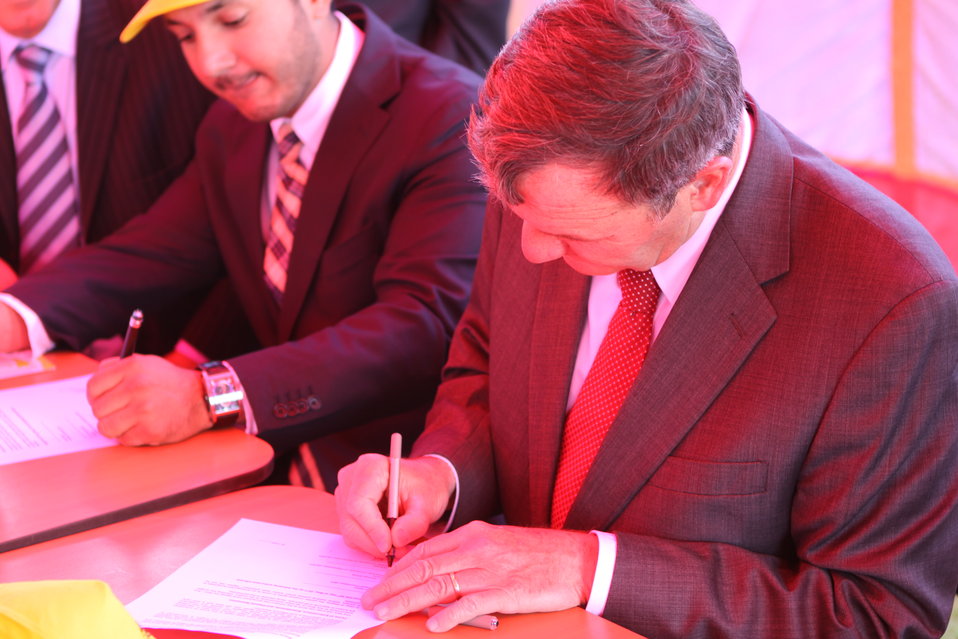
100526 AUAF Graduation 362